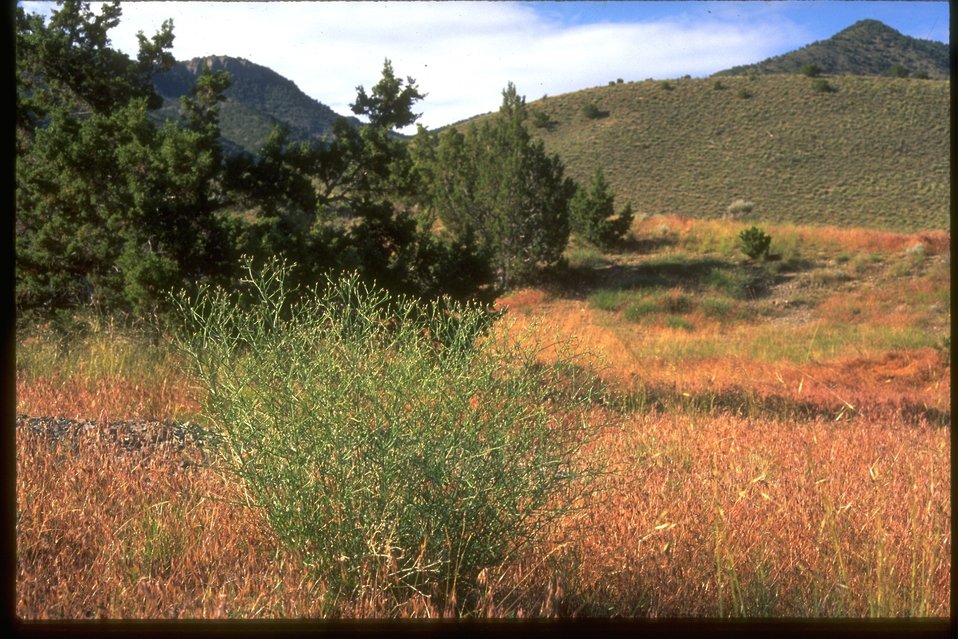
Lone squarrose knapweed plant at Knotch Peak Wilderness, Utah.